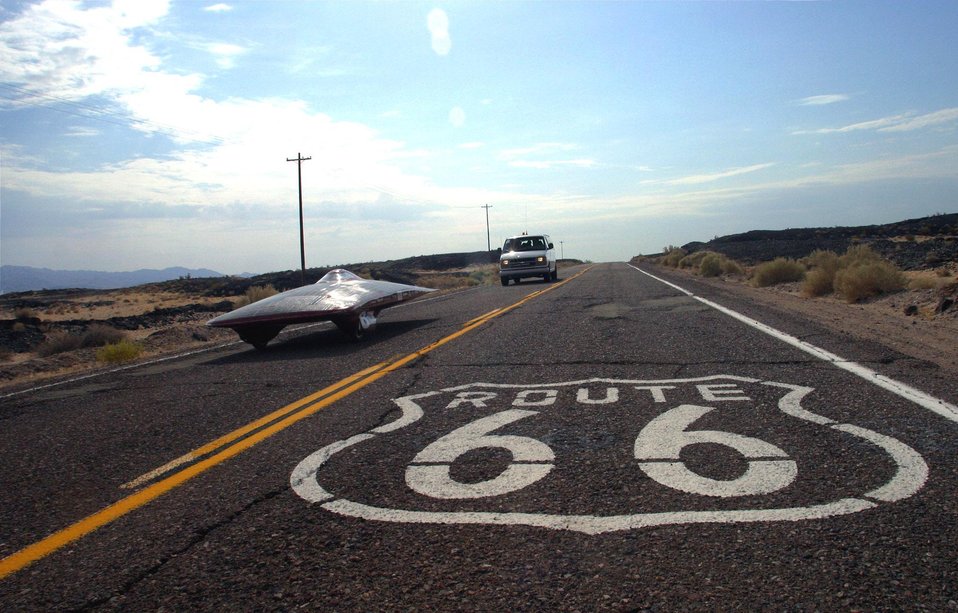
THE UNIVERSITY OF ARIZONA SOLAR CAR DRIVES ON HISTORIC ROUTE 66, AMERICA'S MOTHER ROAD.

THE AMERICAN SOLAR CHALLENGE, THE LONGEST SOLAR CAR RACE IN THE WORLD, IS A DOE SPONSORED EDUCATIONAL EVENT IN WHICH TEAMS COMPETE TO BUILD AND RACE SOLAR-POWERED CARS. TWENTY UNIVERSITIES PARTICIPATED IN THIS YEAR'S EVENT WHICH STARTED IN CHICAGO, ILLINOIS ON JULY 13 AND FOLLOWED ROUTE 66 FOR 2300 MILES TO CLAREMONT, CALIFORNIA, ENDING ON JULY 23, 2003.